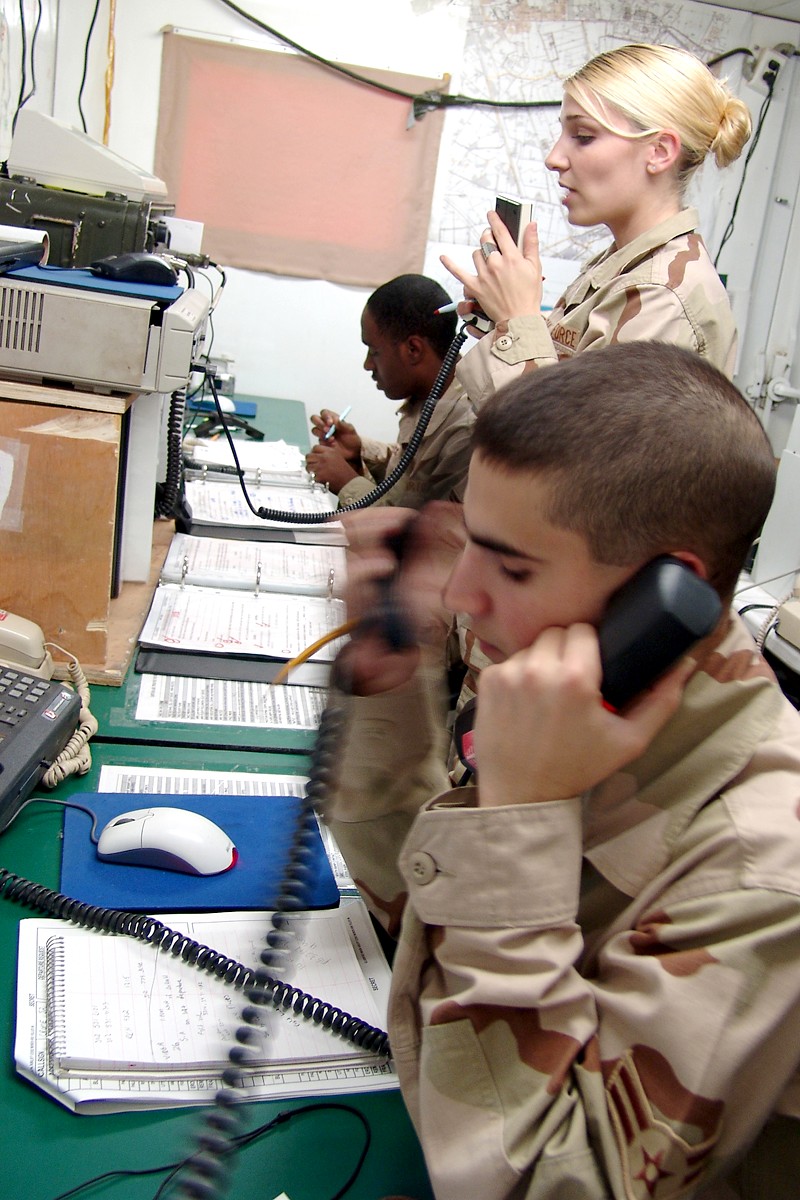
Controllers use

BAGHDAD, Iraq -- Airmen 1st Class Calvin Jackson (rear) and Anthony De Maio team-up in the Camp Sather command post here to handle aircraft in their area of responsibility while Senior Airman Amber Hough makes a notification to camp using the giant voice system. Airman Jackson is deployed from Eielson Air Force Base, Alaska, Airman De Maio is from Misawa Air Base, Japan, and Airman Hough is from Yokota AB, Japan.